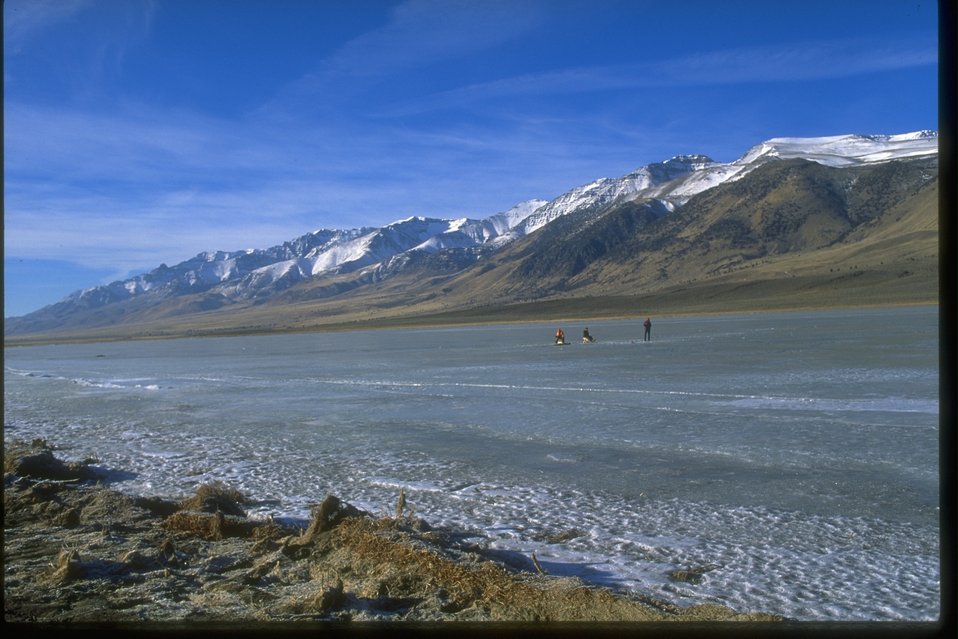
Ice fishing at Mann Lake.